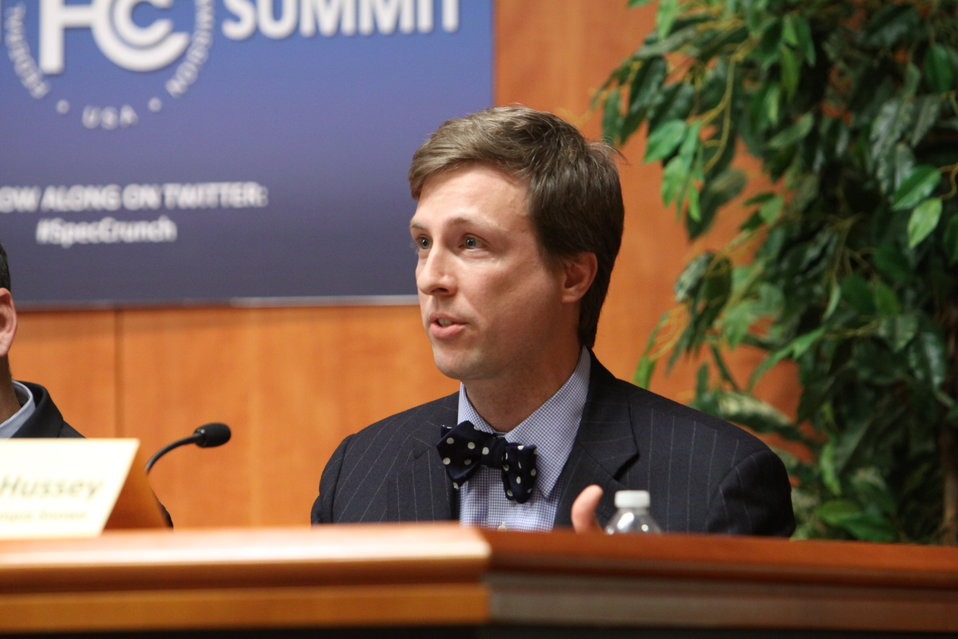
Matt Hussey, Office of Senator Olympia Snowe

FCC Policy Solutions to Spectrum Demand Panel